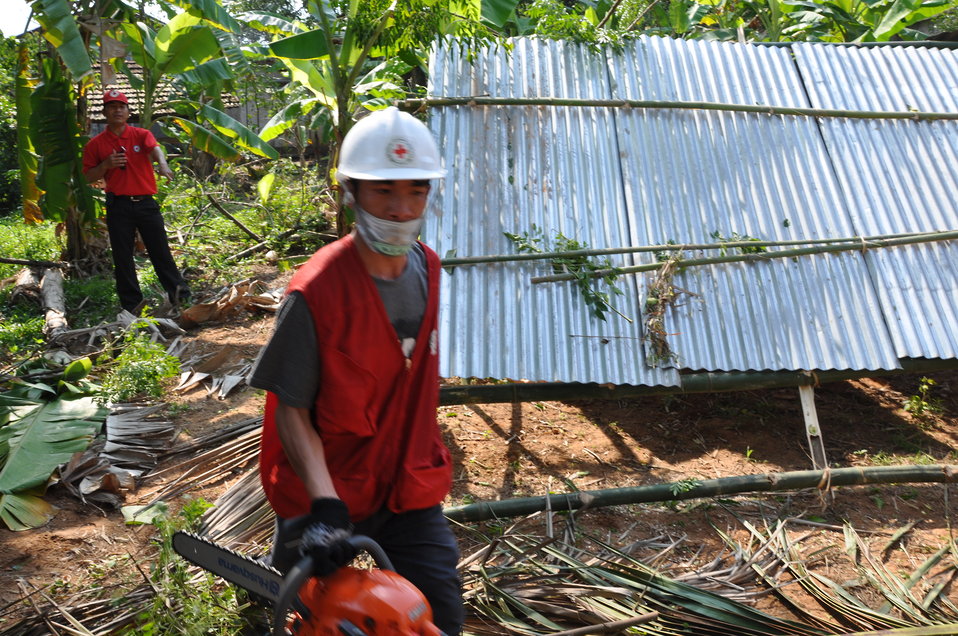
USAID, Red Cross Support Disaster Response Drill in Duy Hoa Commune, Quang Nam Province

Duy Hoa Commune, Quang Nam Province
December 5, 2012